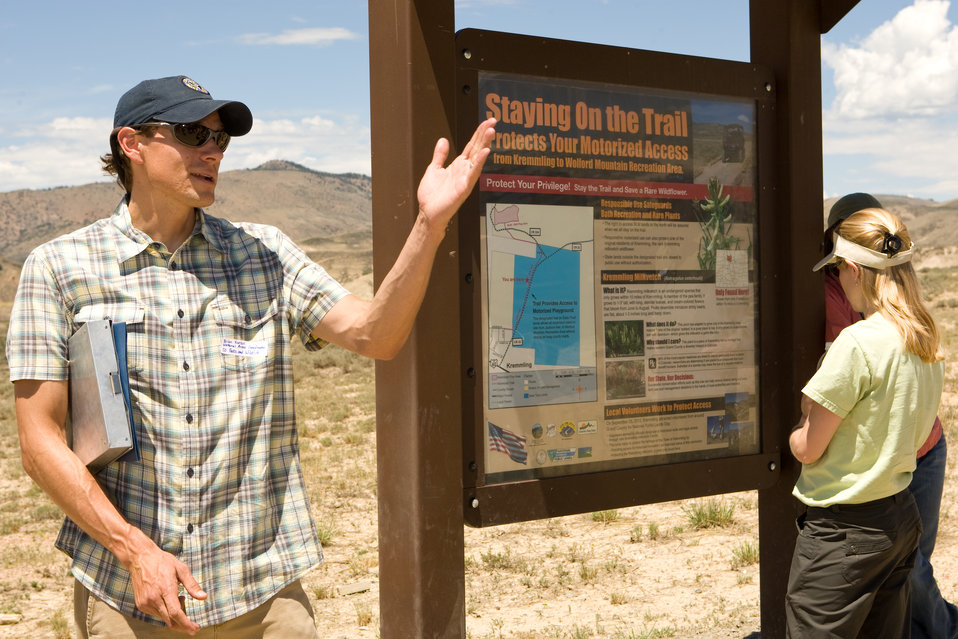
Colorado Rare Plant Conservation Initiative

The Colorado Rare Plant Conservation Initiative (RPCI) is a partnership of 23 statewide and regional agencies, private organizations, and academic institutions working to conserve 121 rare plants in Colorado. As part of these efforts the group developed the Colorado Rare Plant Conservation Strategy, developed Best Management Practices to reduce energy development impacts, addressed climate change, and developed focused strategies for the conservation of individual species at eight priority landscapes. The group has also worked to coordinate volunteer efforts for plant conservation across the state.